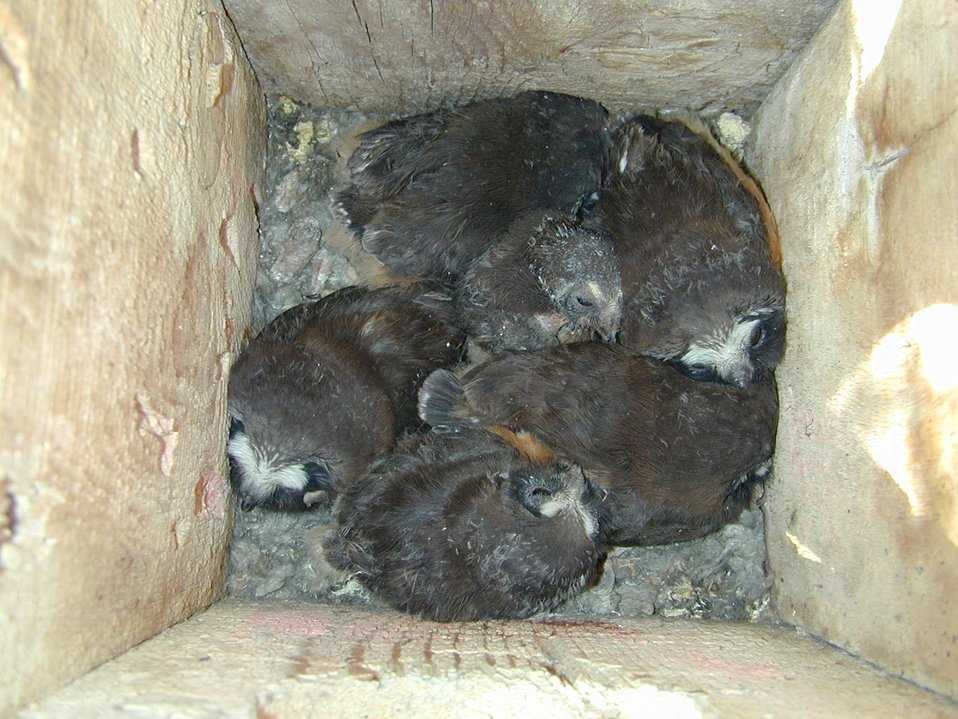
Environmental Education Fire Workshop Timberline High School Fall 2000